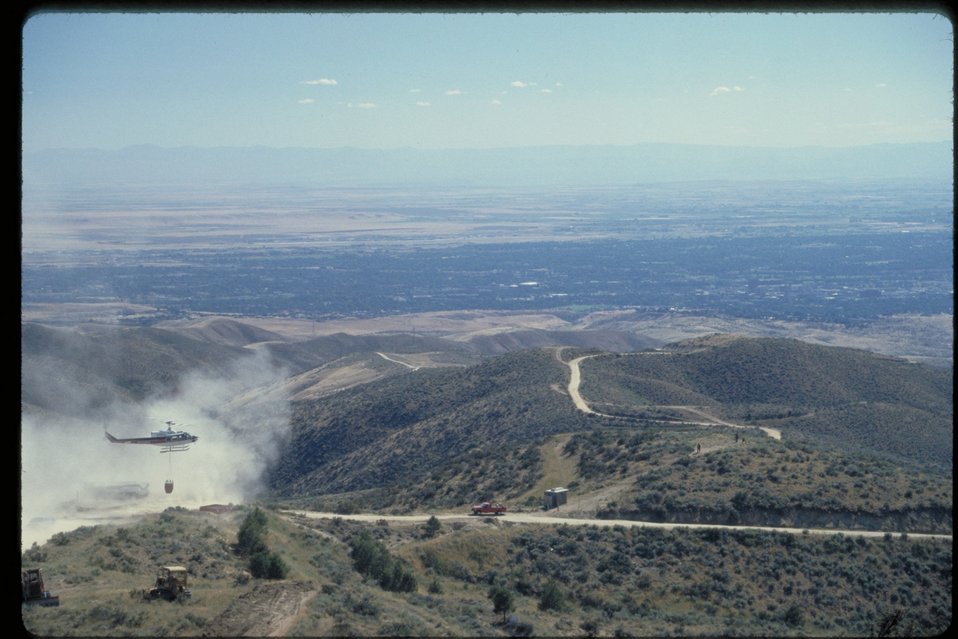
Helicopter Loading water bucket Foothills fire Boise Front Four Rivers Field Office LSRD Lower Snake River District